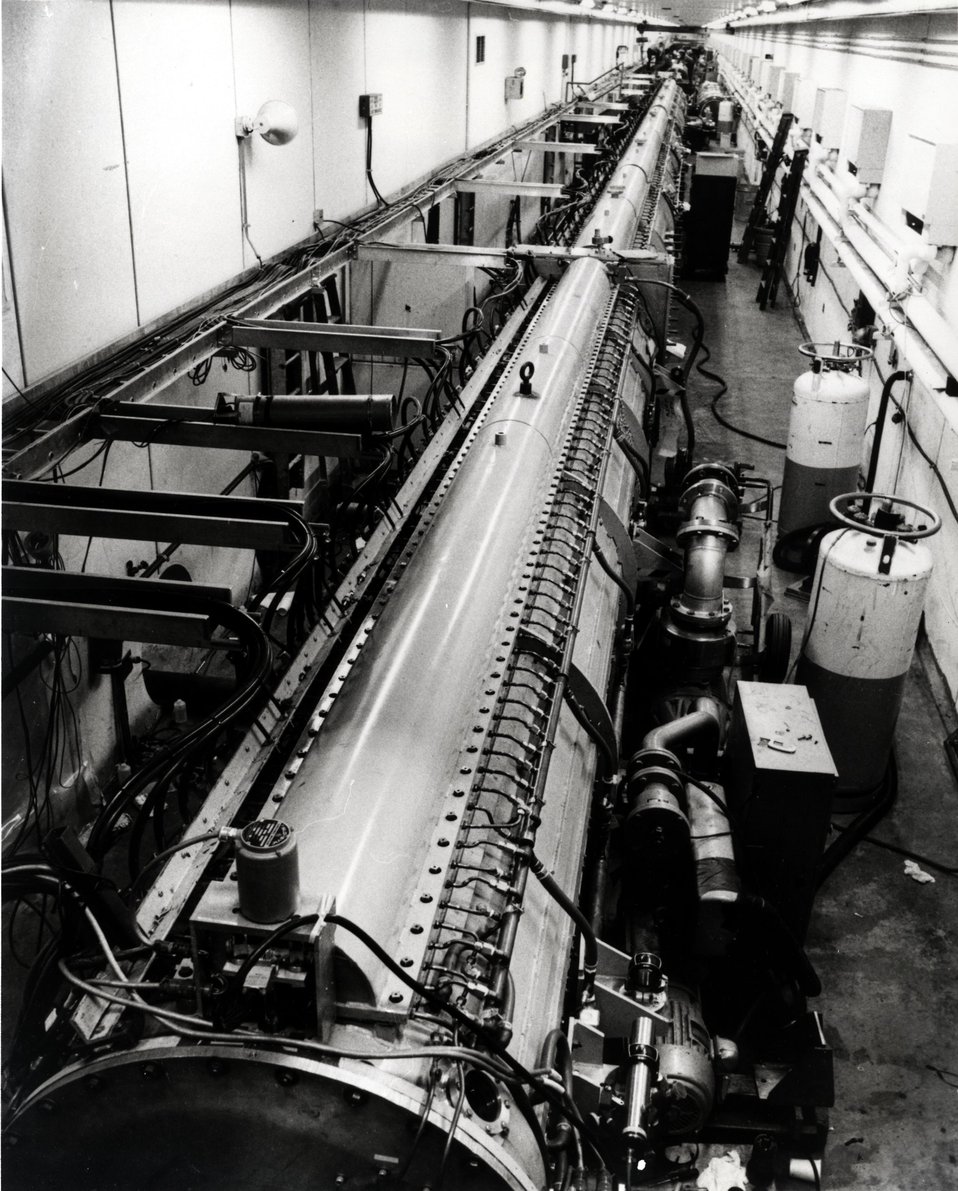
With six of its nine tanks already in place the Linac, part of the AEC's new 200 BeV Synchrotron, begins to take shape at the NAL. c.1970